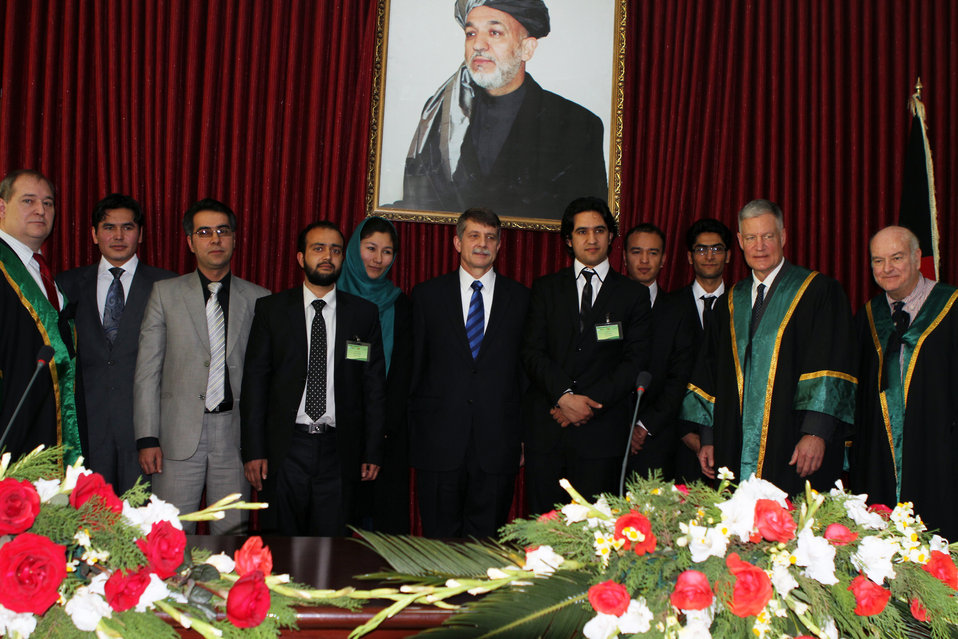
Afghanistan Final National Round of the 2013 Philip C.Jessup International Law Moot Court Competition